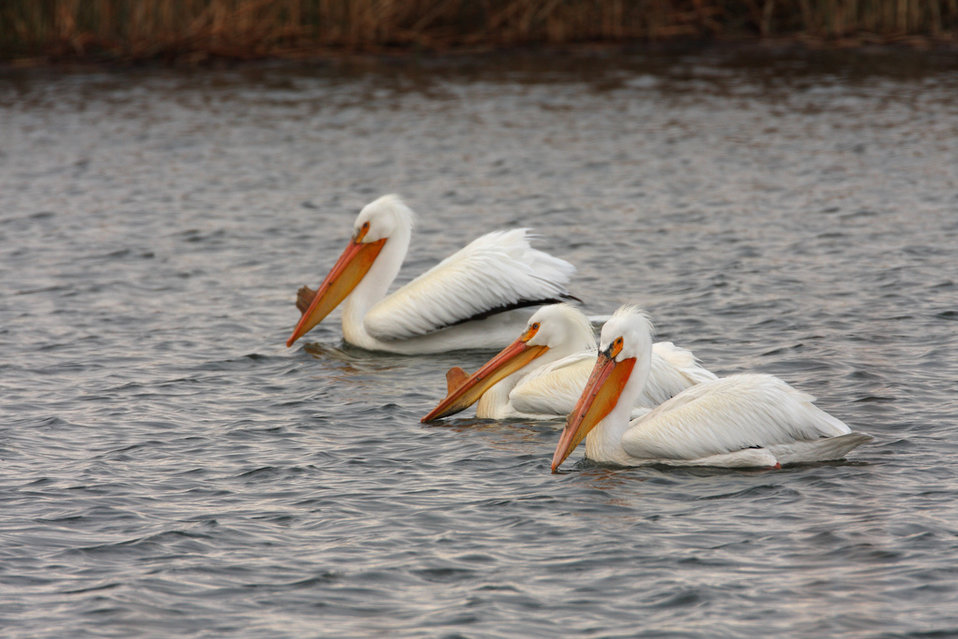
White pelicans

Malheur National Wildlife Refuge, OR. Credit: Barbara Wheeler, barbarawheelerphotography.com